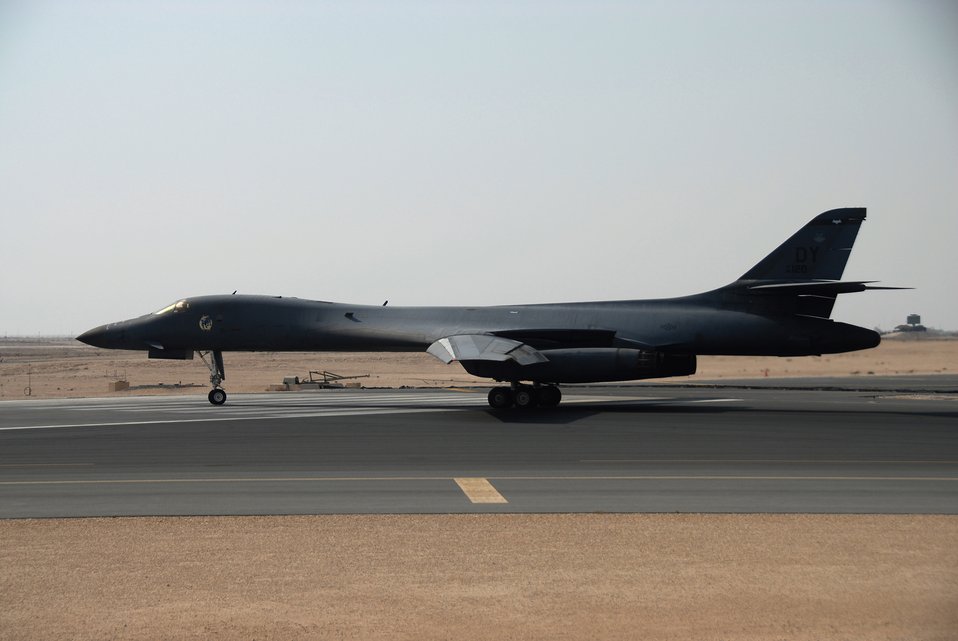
Nov. 30 airpower summary: B-1Bs provide overwatch

A B-1B Lancer aircraft taxis towards the main runway in preparation for takeoff from a Southwest Asia air base. The B-1B is capable of flying intercontinental missions without refueling.